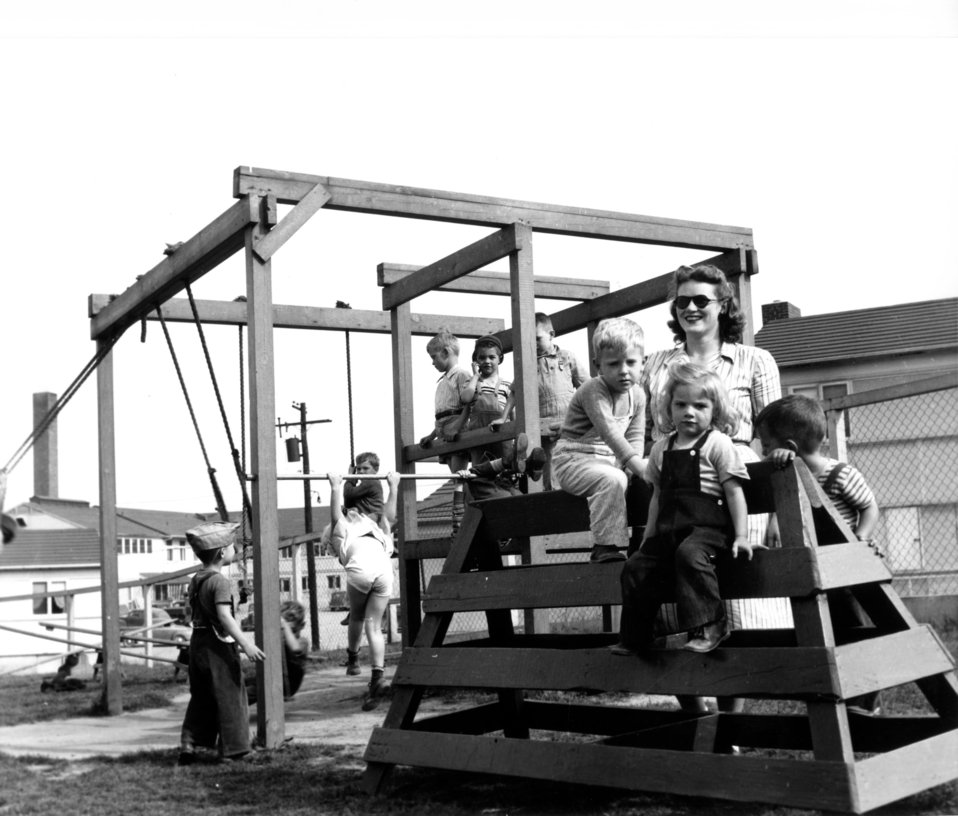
Schools at Oak Ridge